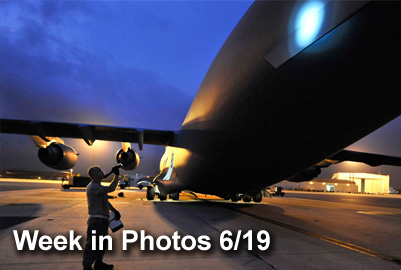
Week in Photos 6/19

Air Force Week in Photos for June 19 highlights photos from around the Air Force. In this photo by James M. Bowman, Senior Airman Kyle Robinson inspects the exterior of a C-17 Globemaster III for missing screws or damage.